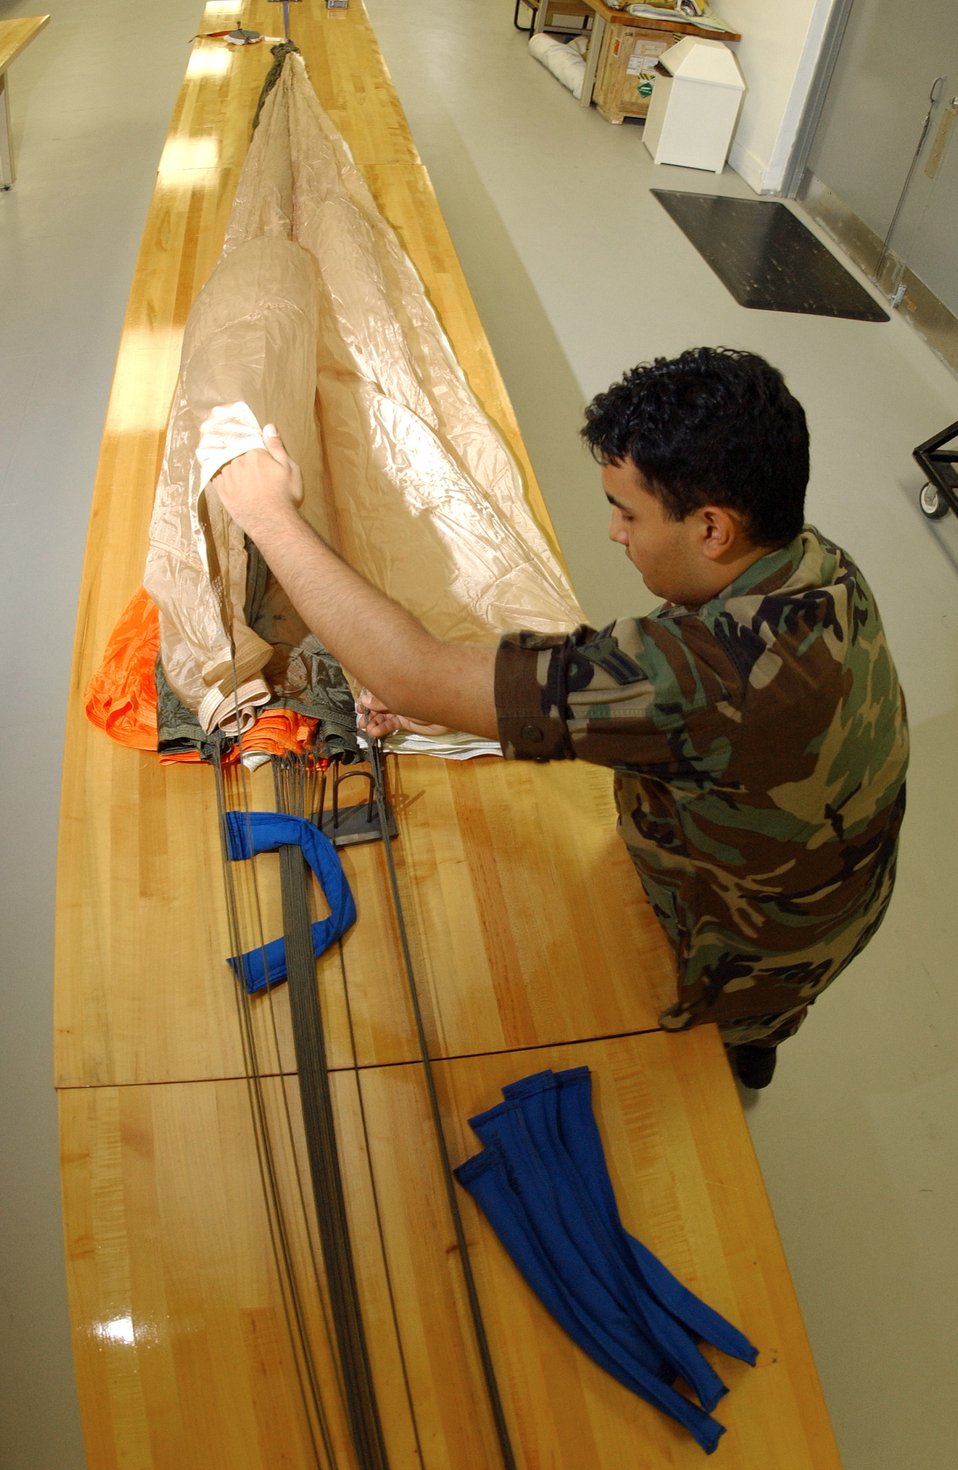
Survival Equipment

Airman 1st Class Joseph Elsey clears air channels on the center of the canopy for a back automatic parachute Wednesday, March 22, 2006, at MacDill Air Force Base, Fla. Airman Elsey performs daily inspections on the BA-22 parachutes to ensure they are ready if needed in an emergency. He is a survival equipment apprentice with the 6th Maintenance Squadron.